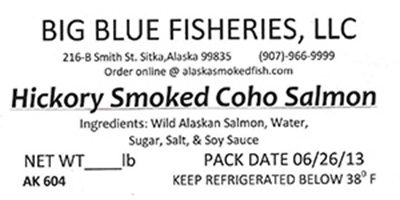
RECALLED – Salmon, Cod

September 30, 2013 – Product Recall – Big Blue Fisheries, Llc Recalls All Smoked Products From All Lots, Various Sizes, in Vacuum Packaging Because of Possible Health Risk.